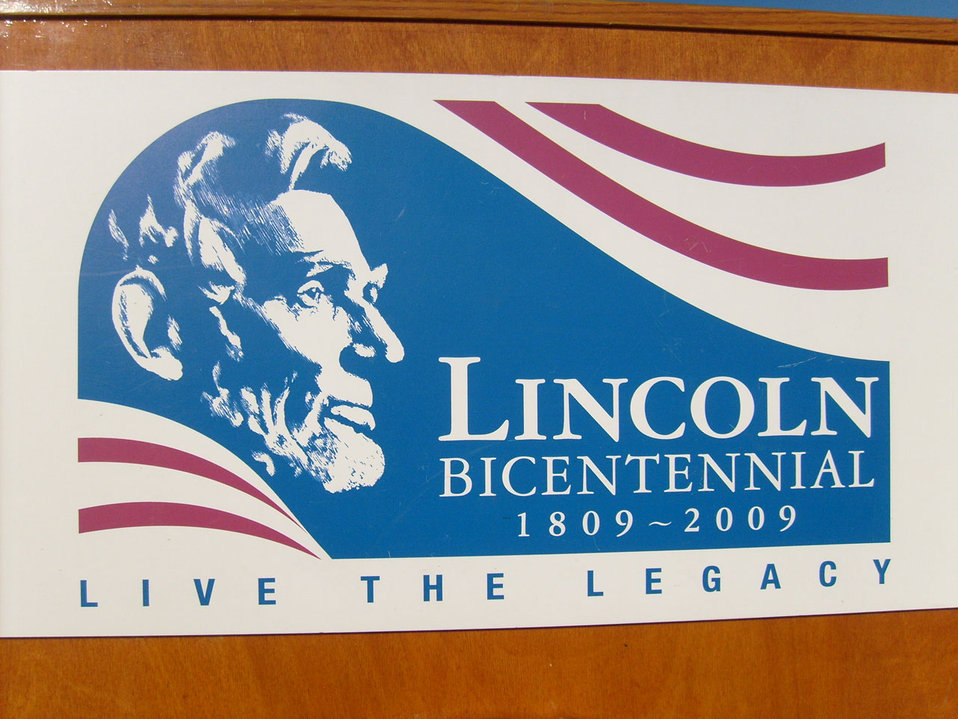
Lincoln bicentenial birthday ceremony.